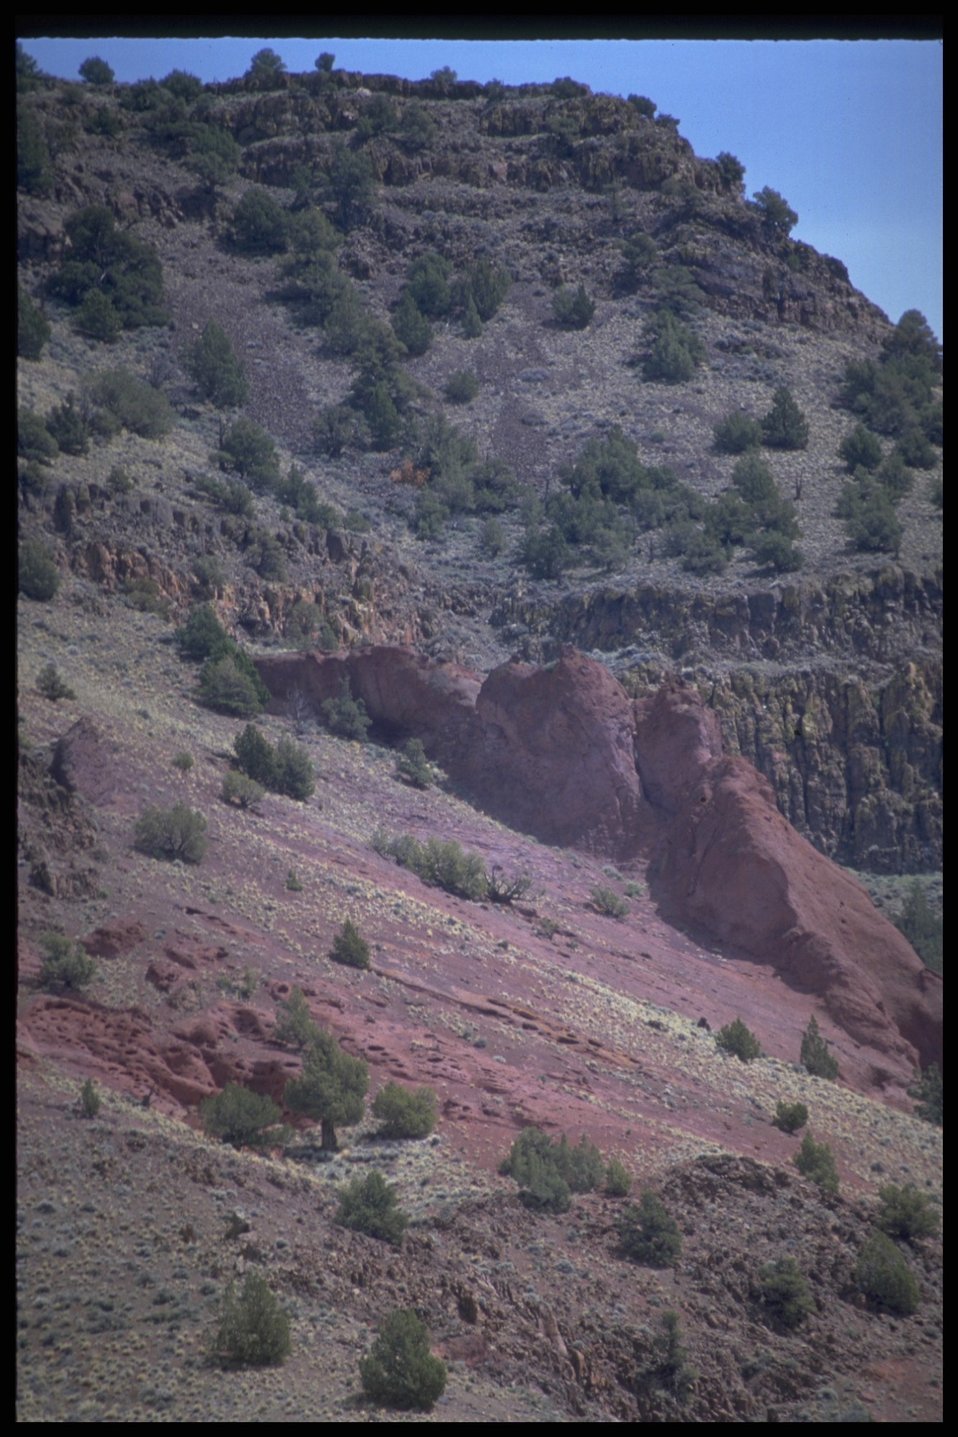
Hart Mountain, Lakeview District.